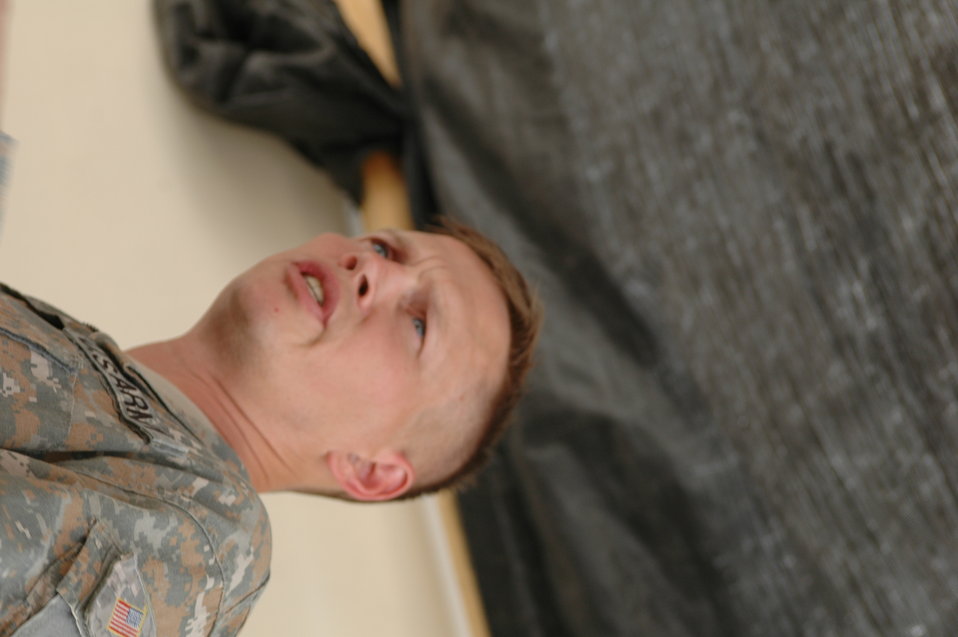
CODEL Berman